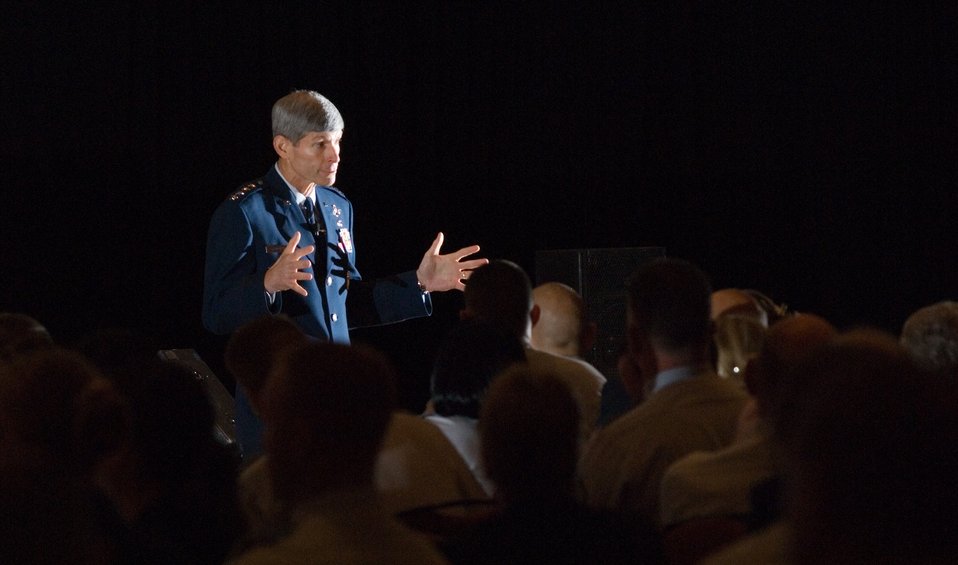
Air Force chief of staff discusses leadership goals

Gen. Norton Schwartz, Air Force chief of staff, was the keynote speaker Aug. 25 at the Air Force Sergeants Association's annual Professional Airmen's Conference and International Convention in San Antonio. General Schwartz discussed the importance of noncommissioned officer leadership and goals and objectives to remedy problems in today's Air Force.